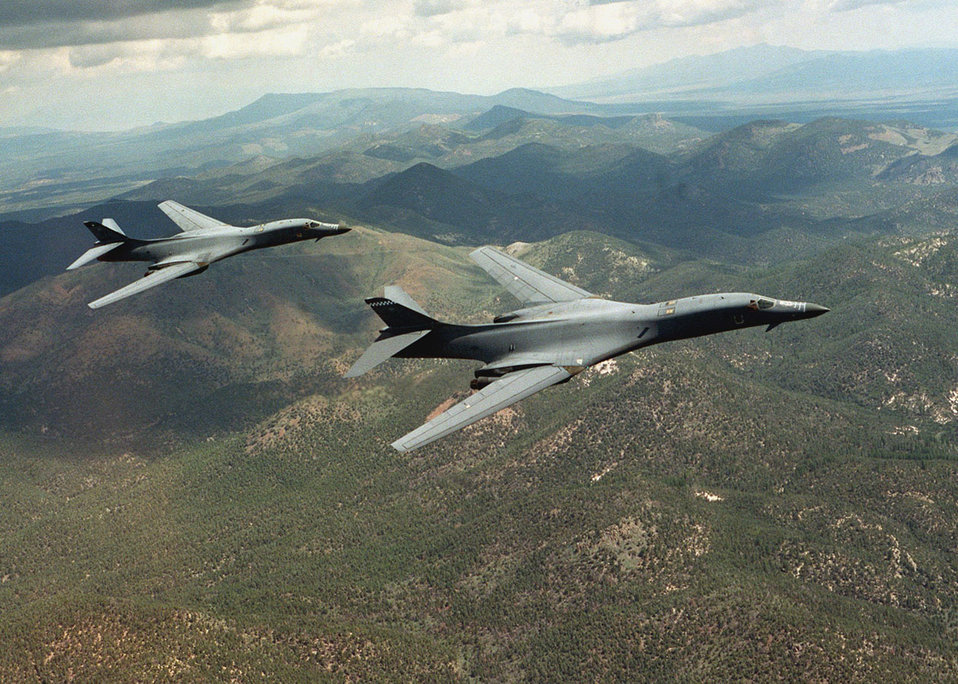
Duo Lancers

OVER WYOMING -- The B-1B is a long-range strategic bomber, capable of flying intercontinental missions without refueling, then penetrating present and future sophisticated enemy defenses. It can perform a variety of missions, including that of a conventional weapons carrier for theater operations.